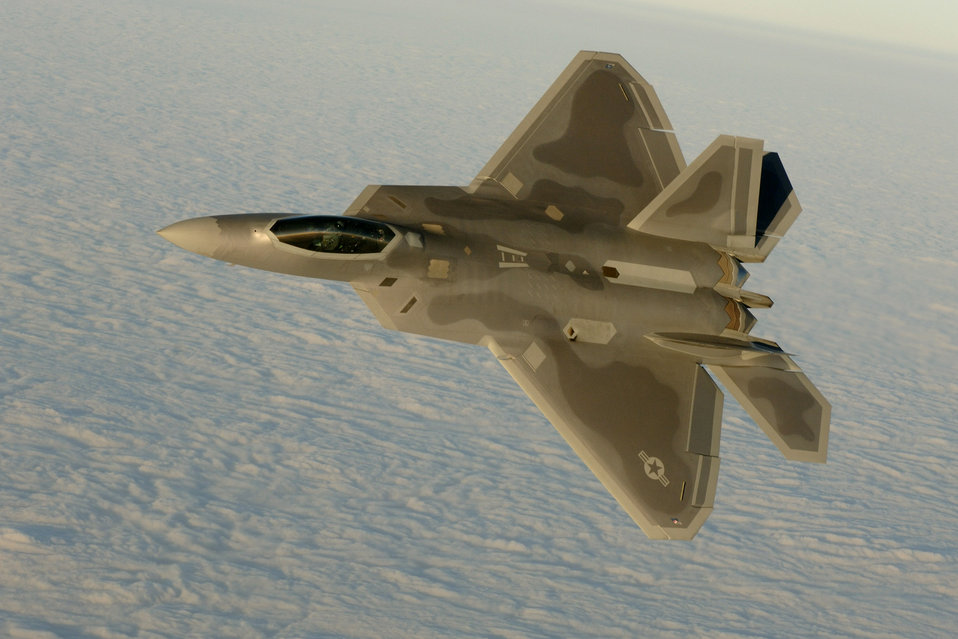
We did it

OVER THE ATLANTIC OCEAN (AFPN) -- Capt. Chris Batterton aggressively banks his F-22A Raptor during a basic fighting maneuver training mission off the Virginia coast last week. The captain is with the 27th Fighter Squadron, the Air Force's first unit to fly the Raptor. The 1st Fighter Wing declared initial operational capability last month, making the Air Force's fifth generation fighter ready to fight.